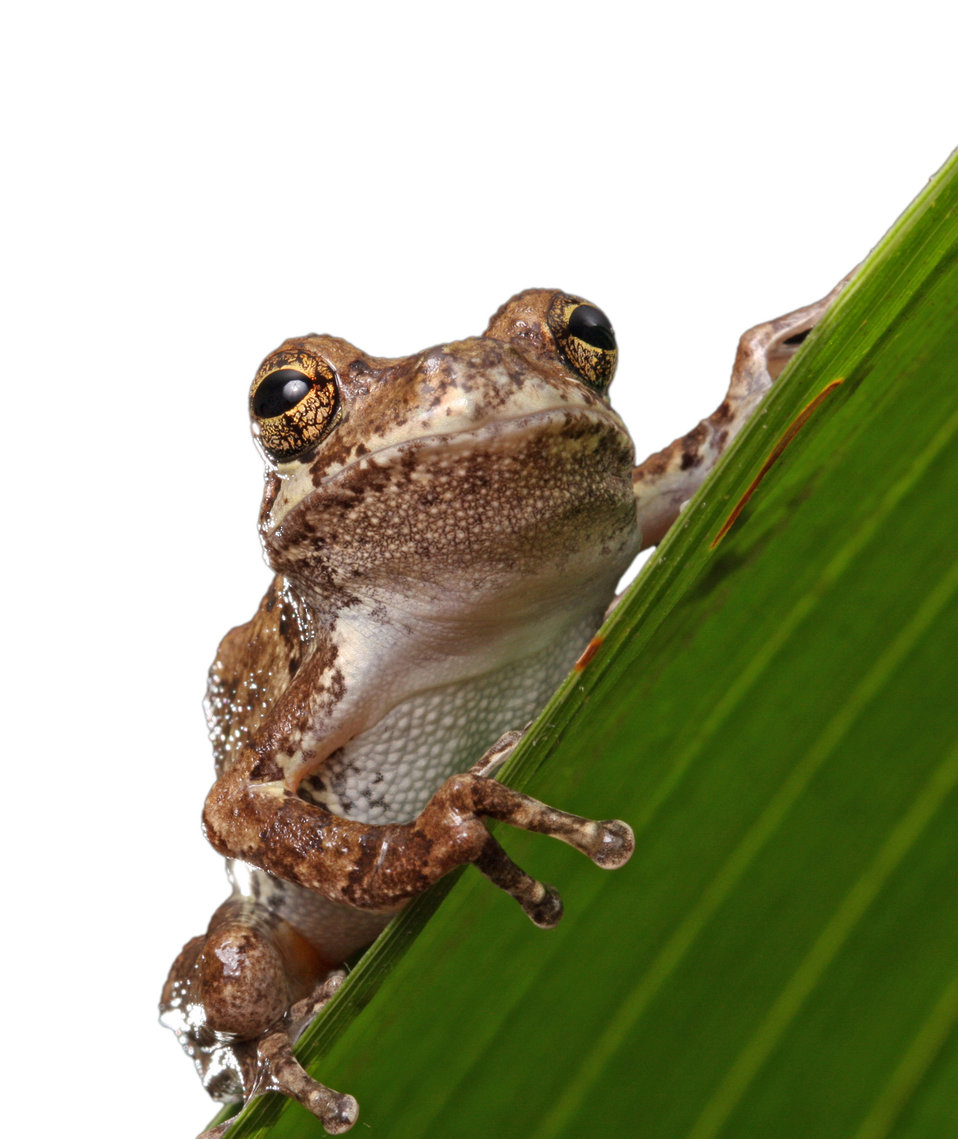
Frog isolated macro

Macro image close-up of a grey tree frog or gray tree frog isolated on white background.